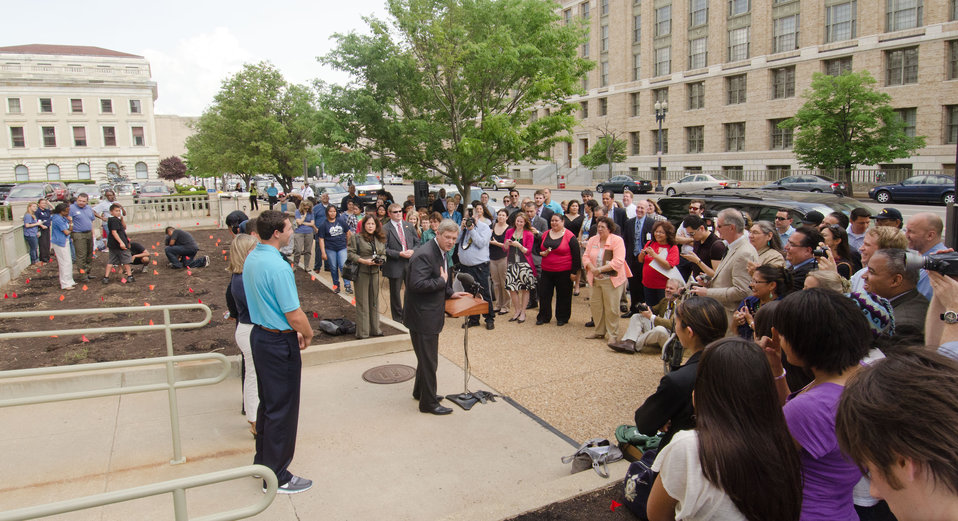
Agriculture Secretary Tom Vilsack (at podium) and St. Louis Rams Quarterback Sam Bradford (blue shirt, left) met at the U.S. Department of Agriculture in Washington, DC, on Wednesday, April 27, 2011, to encourage Native American Youth to pursue a healthy lifestyle. More than 30 Students from Eastern and Western Tribes, Southeast Alaska, and Tuba City, Arizona came to the Nation’s Capitol to plant vegetable seeds that are indigenous to North America. Bradford is a citizen of the Cherokee Nation. The garden is called The Roots of American Agriculture, and is part of the Headquarters’ People’s Garden. Also speaking at the event was the Executive Director of First Lady Michelle Obama’s Let’s Move! Campaign Robin Schepper (center); Director of the Bureau of Indian Education.